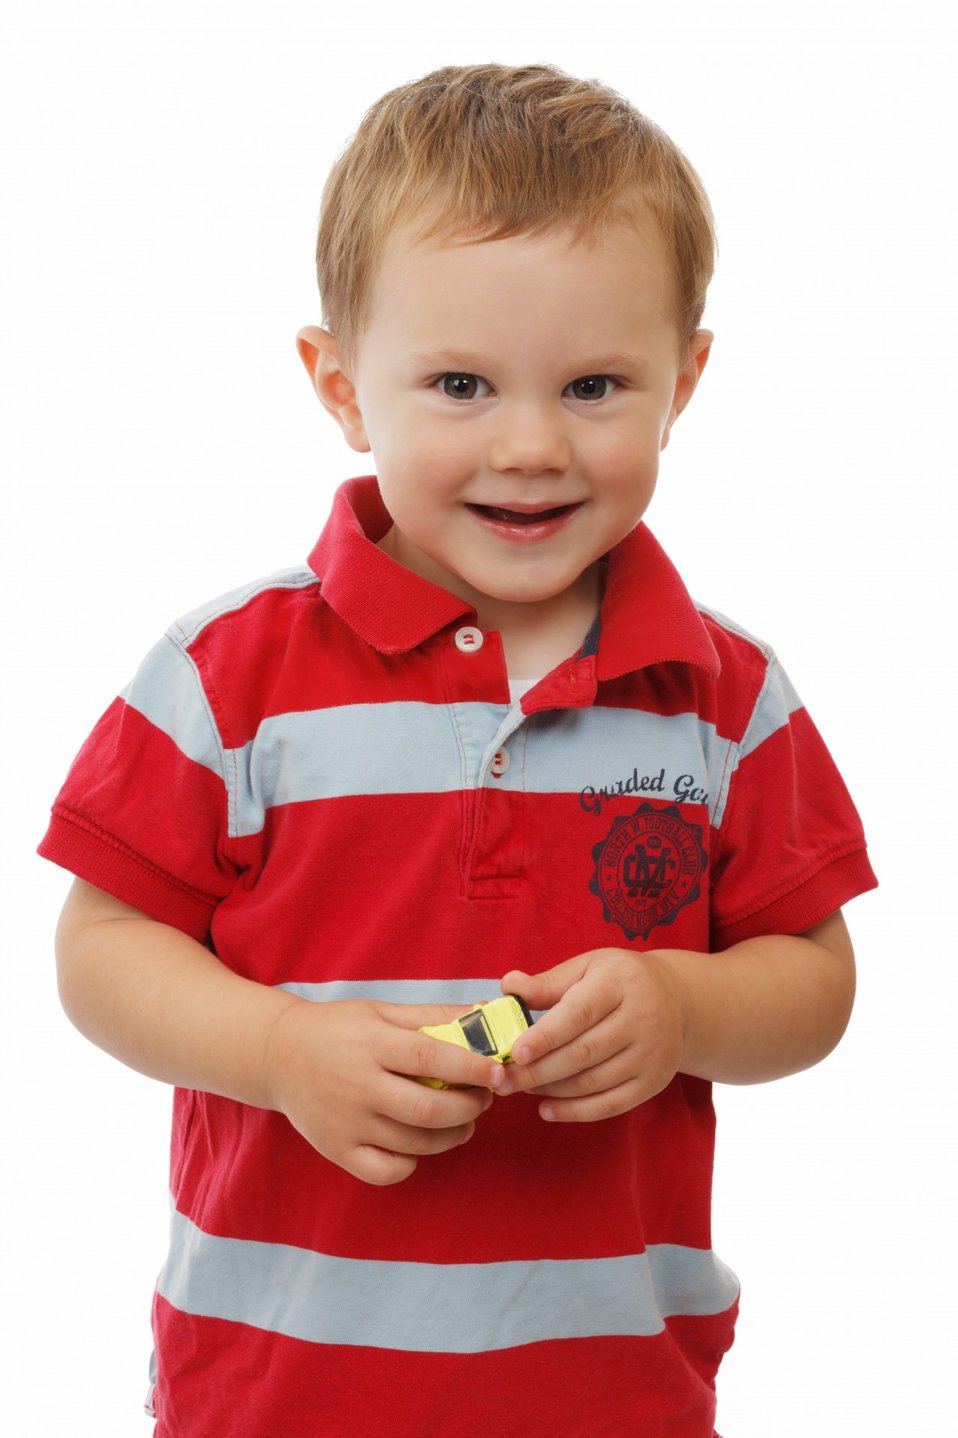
Portrait of a little boy isolated on white background.